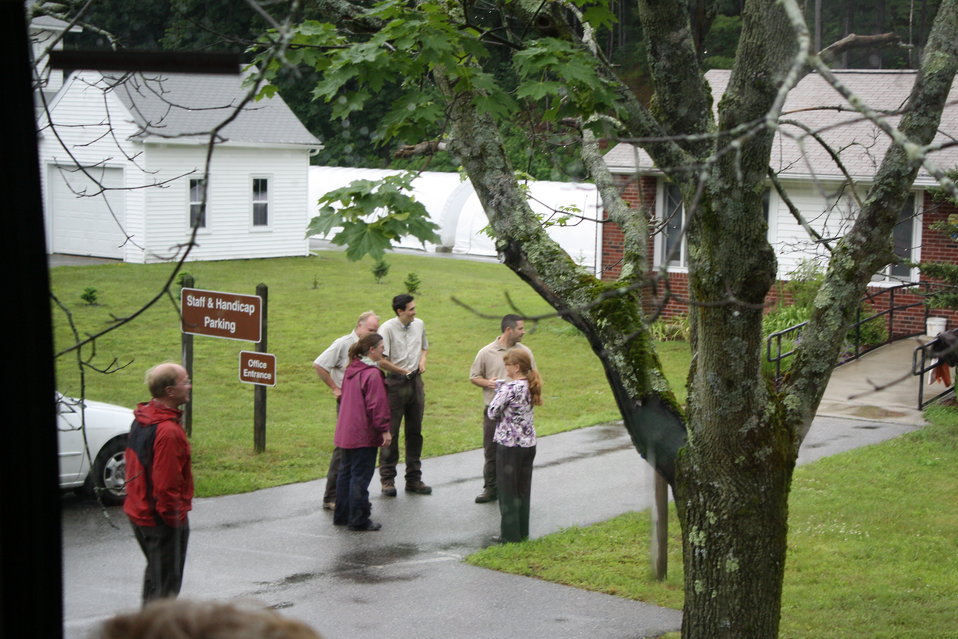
Nashua National Fish Hatchery welcomes regional office employees